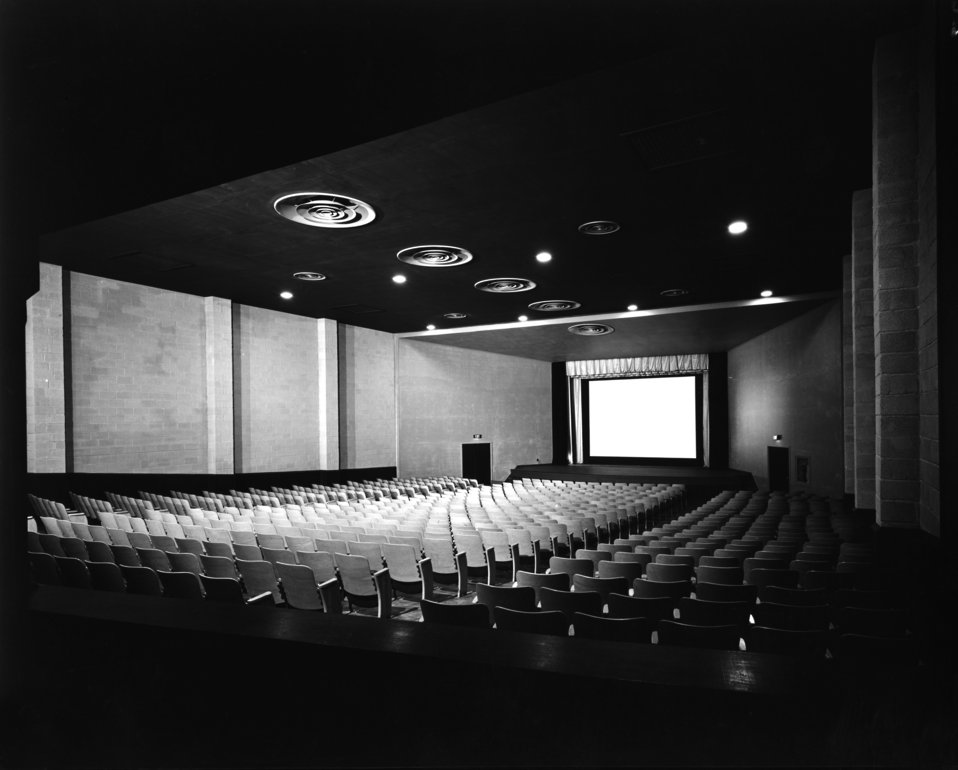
Center Theater Oak Ridge 1944

MED135 DOE Photo Ed Westcott Oak Ridge Tennessee